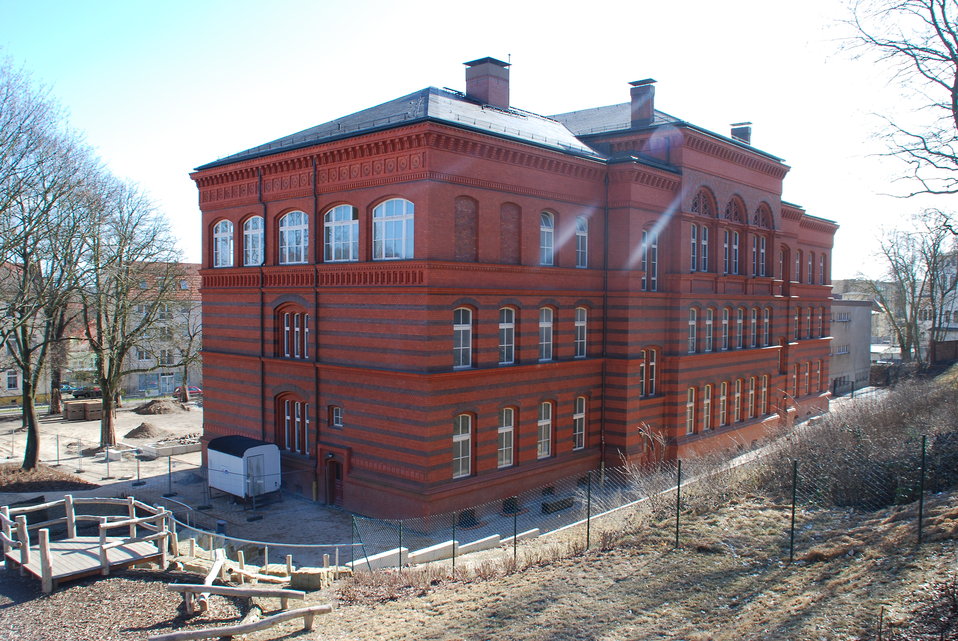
Abriss Bahnhofstunnel Frankfurt (Oder) Ehemaliges Friedrichsgymnasium